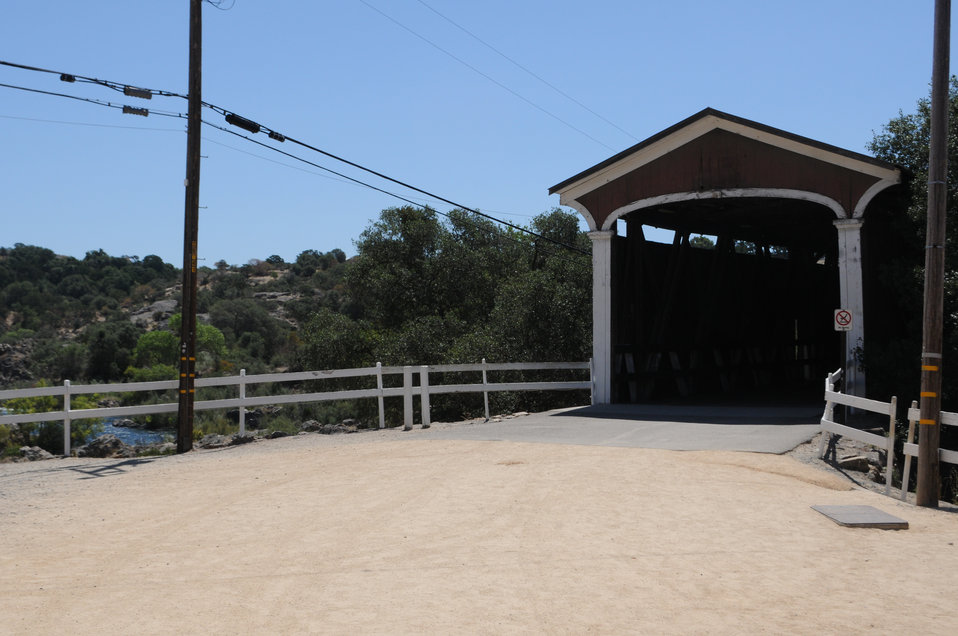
Knights Ferry Covered Bridge

The Knights Ferry Covered Bridge near Oakdale, Calif., shown July 22, 2011, was surveyed in June by the National Park Service for inclusion as a historic landmark in the Library of Congress. The U.S. Army Corps of Engineers Sacramento District is charged with preserving the bridge, which is located on land managed under the district's Stanislaus River Parks.